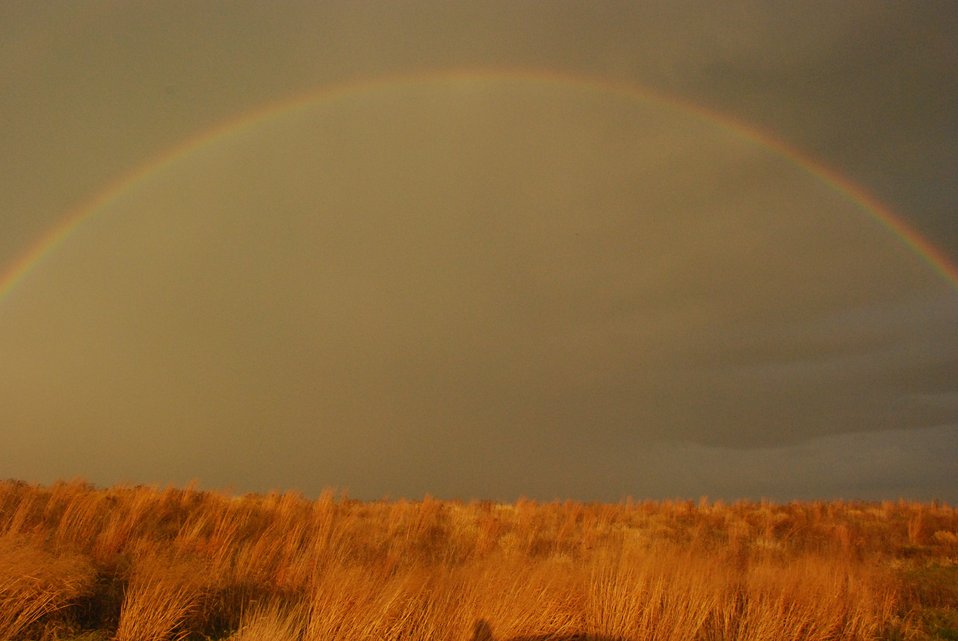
Rainbow over prairie, Neal Smith Refuge

A full rainbow spans a golden field of native tallgrass prairie at Neal Smith National Wildlife Refuge in Iowa.